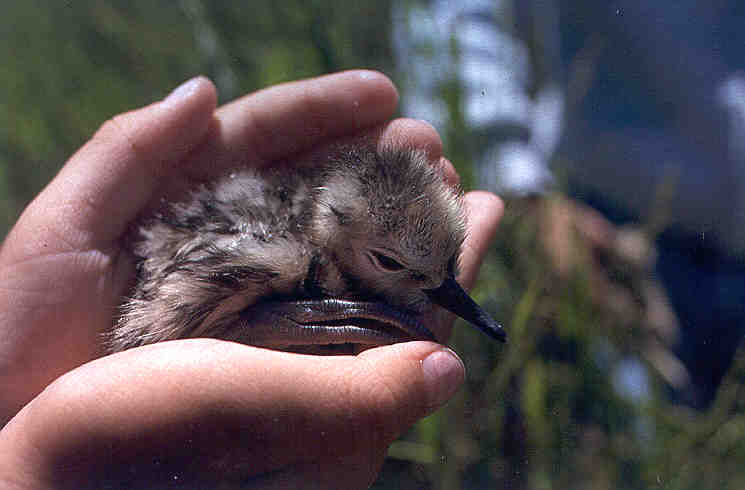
Marbled Godwit Chick, Bowdoin NWR

Marbled gowit chick in researcher's hands. Bowdoin NWR